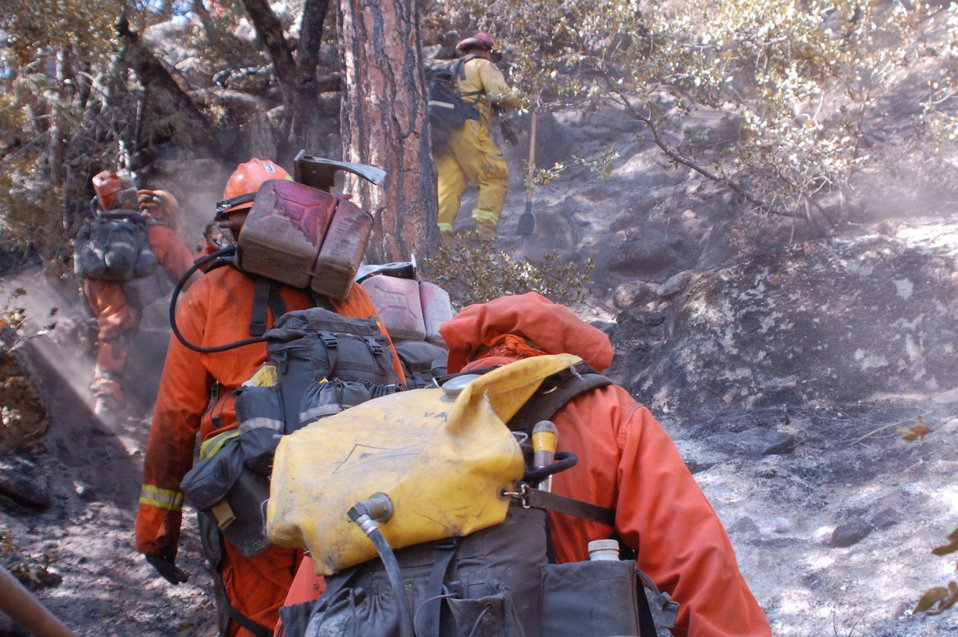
A Center for Disease Control (CDC) crew climbs along the fire line at the Power Fire in California. The Power Fire in the Stanislaus National Forest near Beardsley Reservoir in California began on Aug. 5, 2013 is under investigation. The fire has consumed 881 acres and is 32% contained.